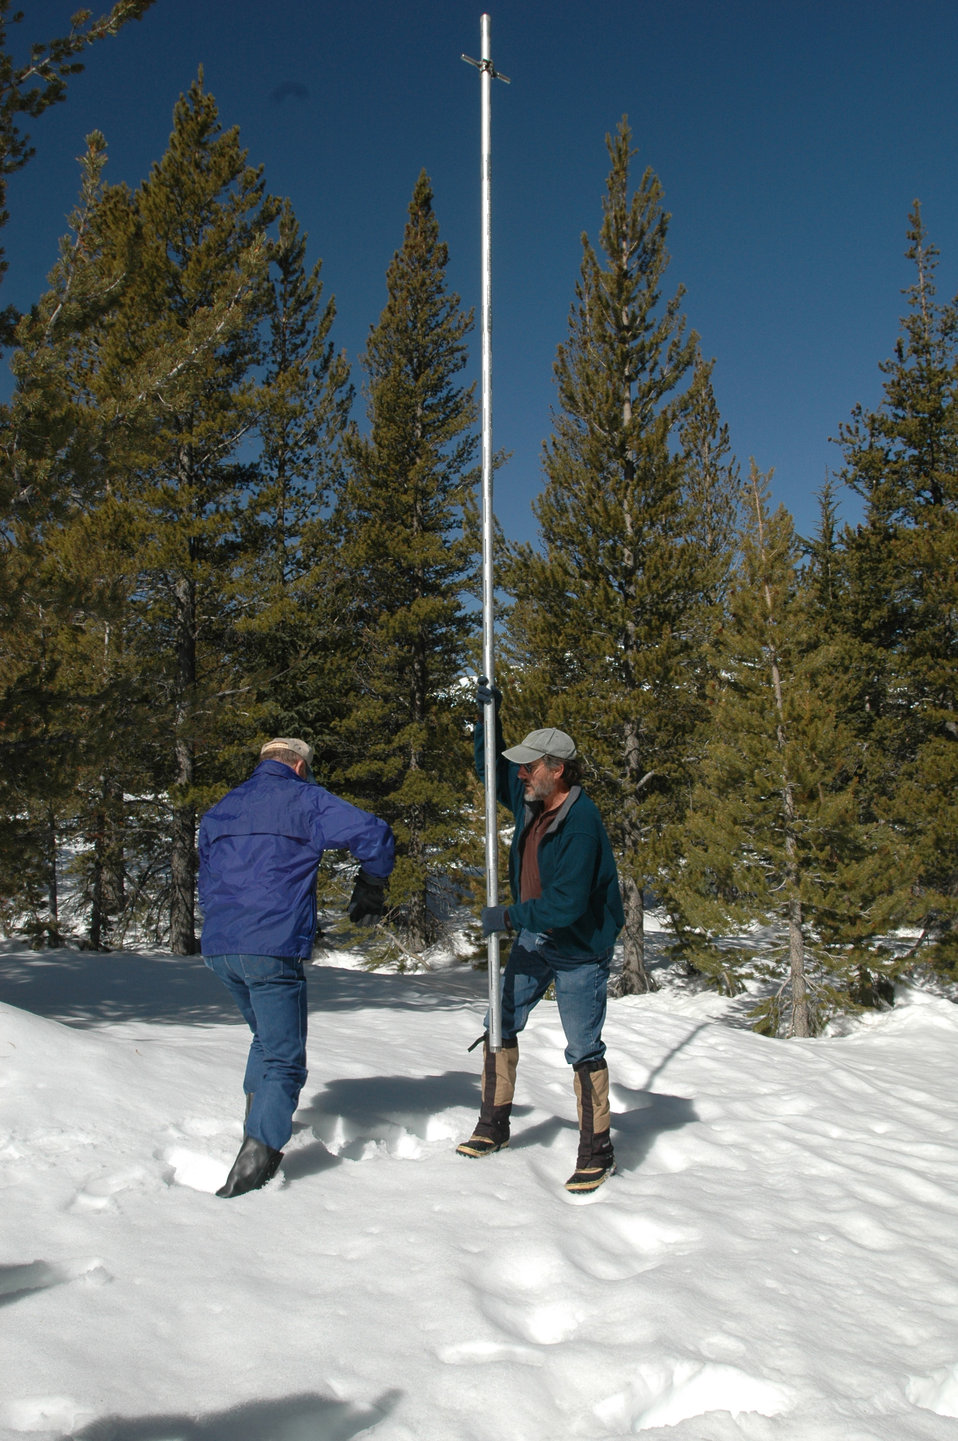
Scientists from the Federal, State, and private cooperative snow survey program directed by the U.S. Department of Agriculture's (USDA) Natural Resources Conservation Service (NRCS) sample the snow pack in Nevada on May 2, 2006. Snow plays a vital role in the lives of the citizens who live in the Western U.S. as a primary source of the water supply. The West's high mountain ranges hold a vast snowpack that provides 50 to 80 percent of the year's water supply and nature cannot be relied upon to provide an uninterrupted, dependable supply of meltwater to meet all the downstream requirements. The successful management of the West’s water supply begins with knowledge of the primary source of water in the West: snow.